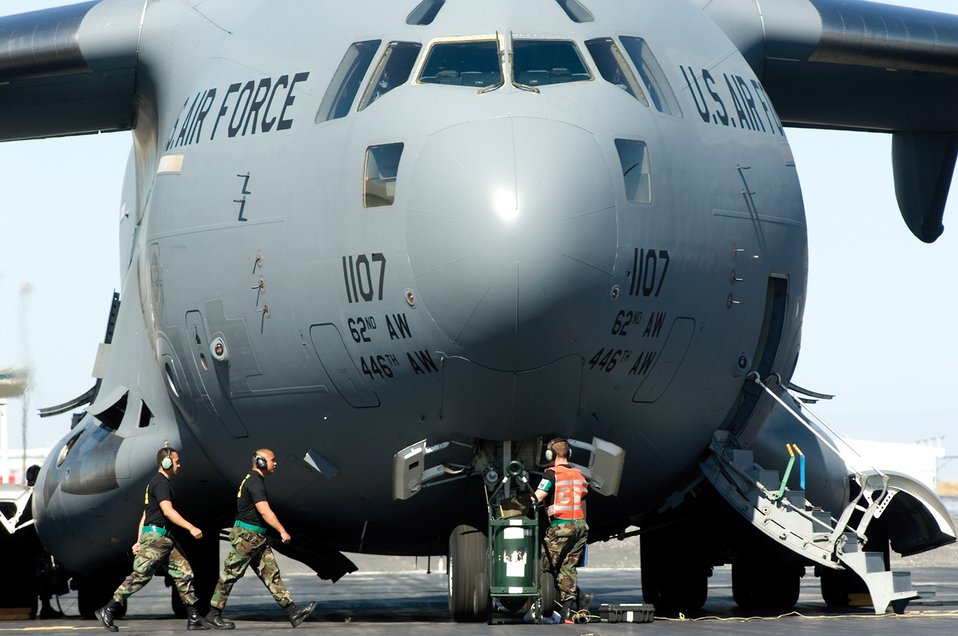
McChord Airmen lasso final training prep for Rodeo

Staff Sgt. Zachary Hoene (from left), Tech. Sgt. Carey Yamaguchi and Staff Sgt. Jeddiah Smith prepare to launch a C-17 Globemaster III as part of a Rodeo training session July 10 at Moses Lake, Wash. The Airmen are assigned to the 62nd Maintenance Group at McChord Air Force Base, Wash.